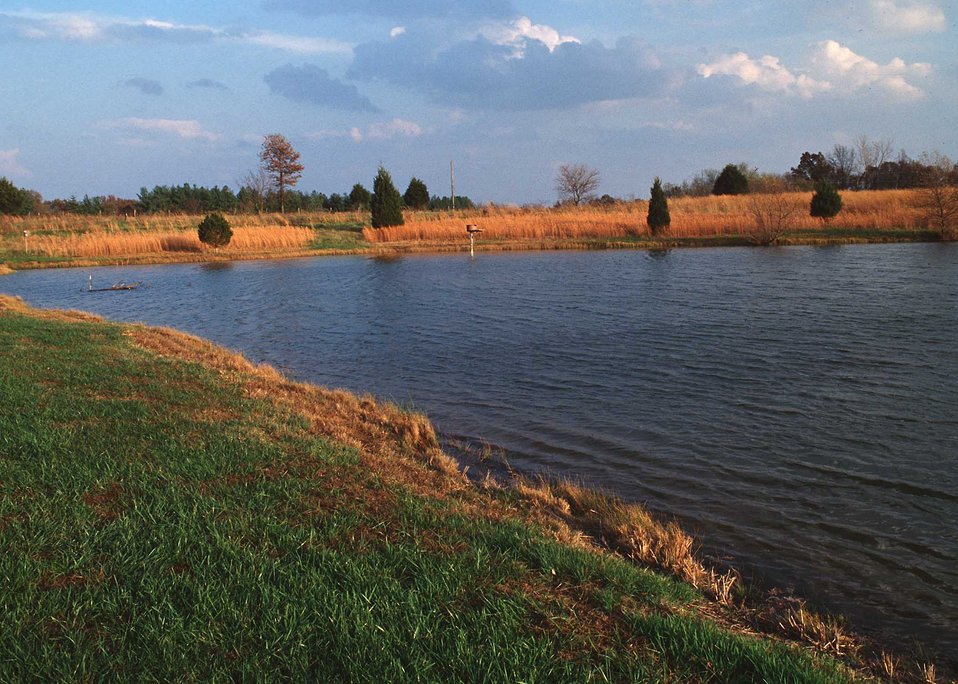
A pond on a Central Missouri farm managed for wildlife.